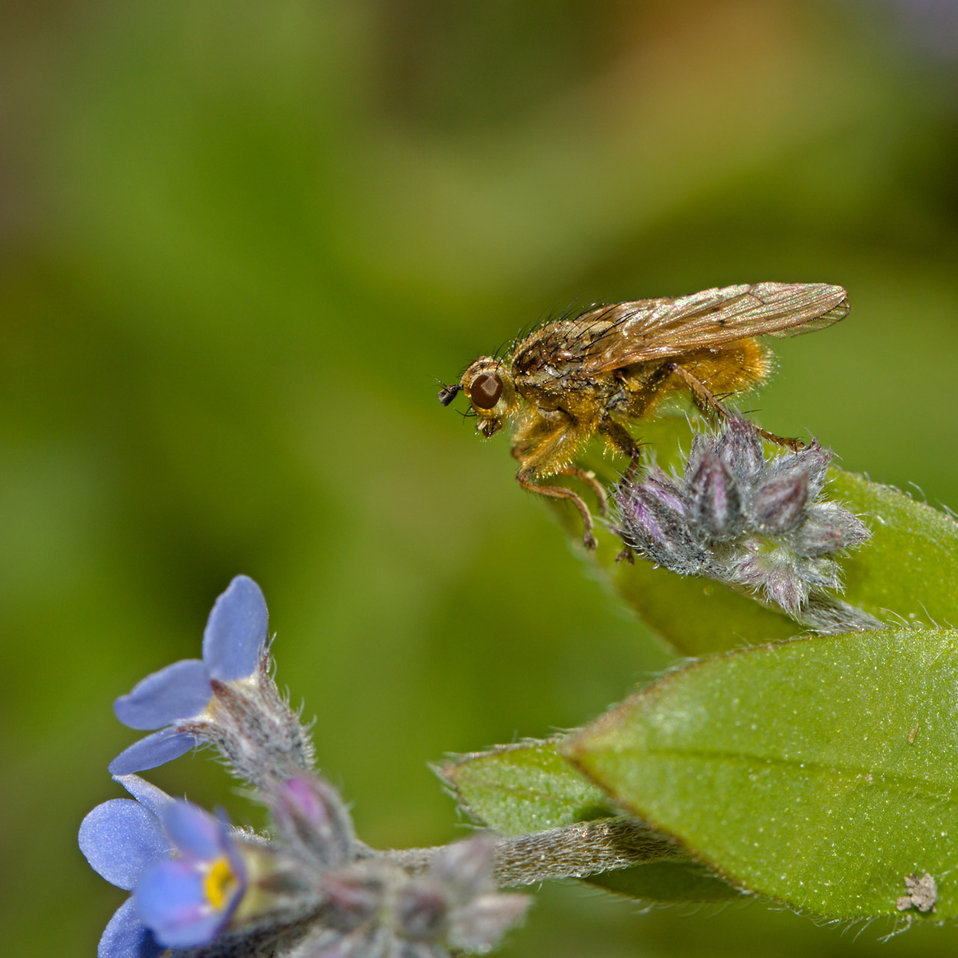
Alien 1

Some macro picture of animals.